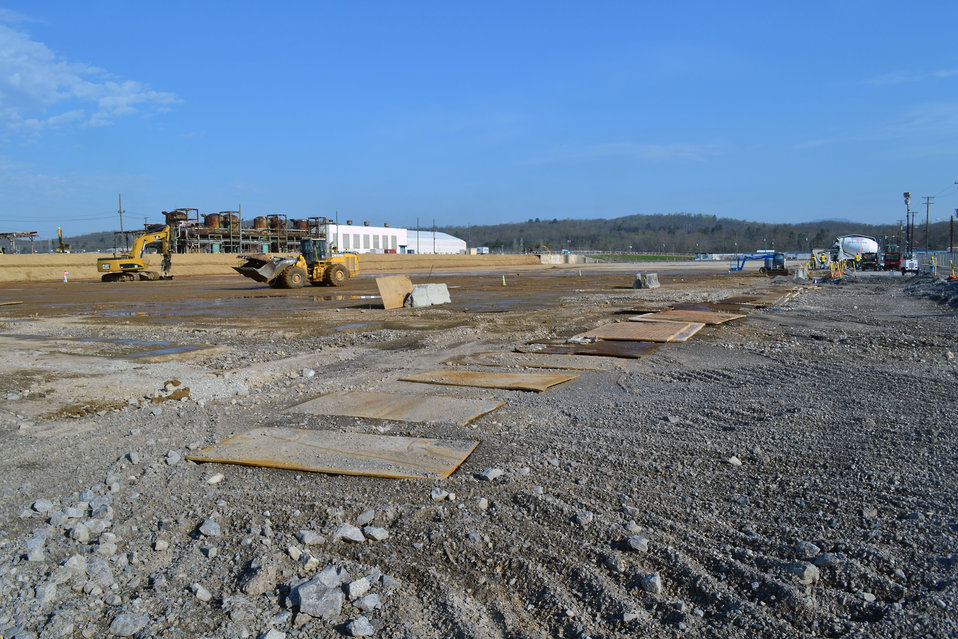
DandD work K-25 Oak Ridge

13-034 DOE photo Lynn Freeny 4-9-2013